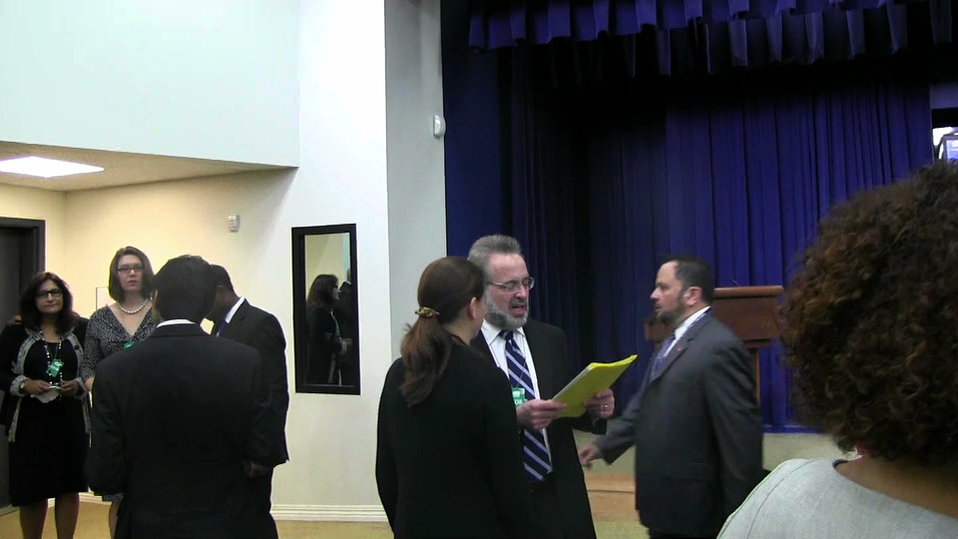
Valdiserri1